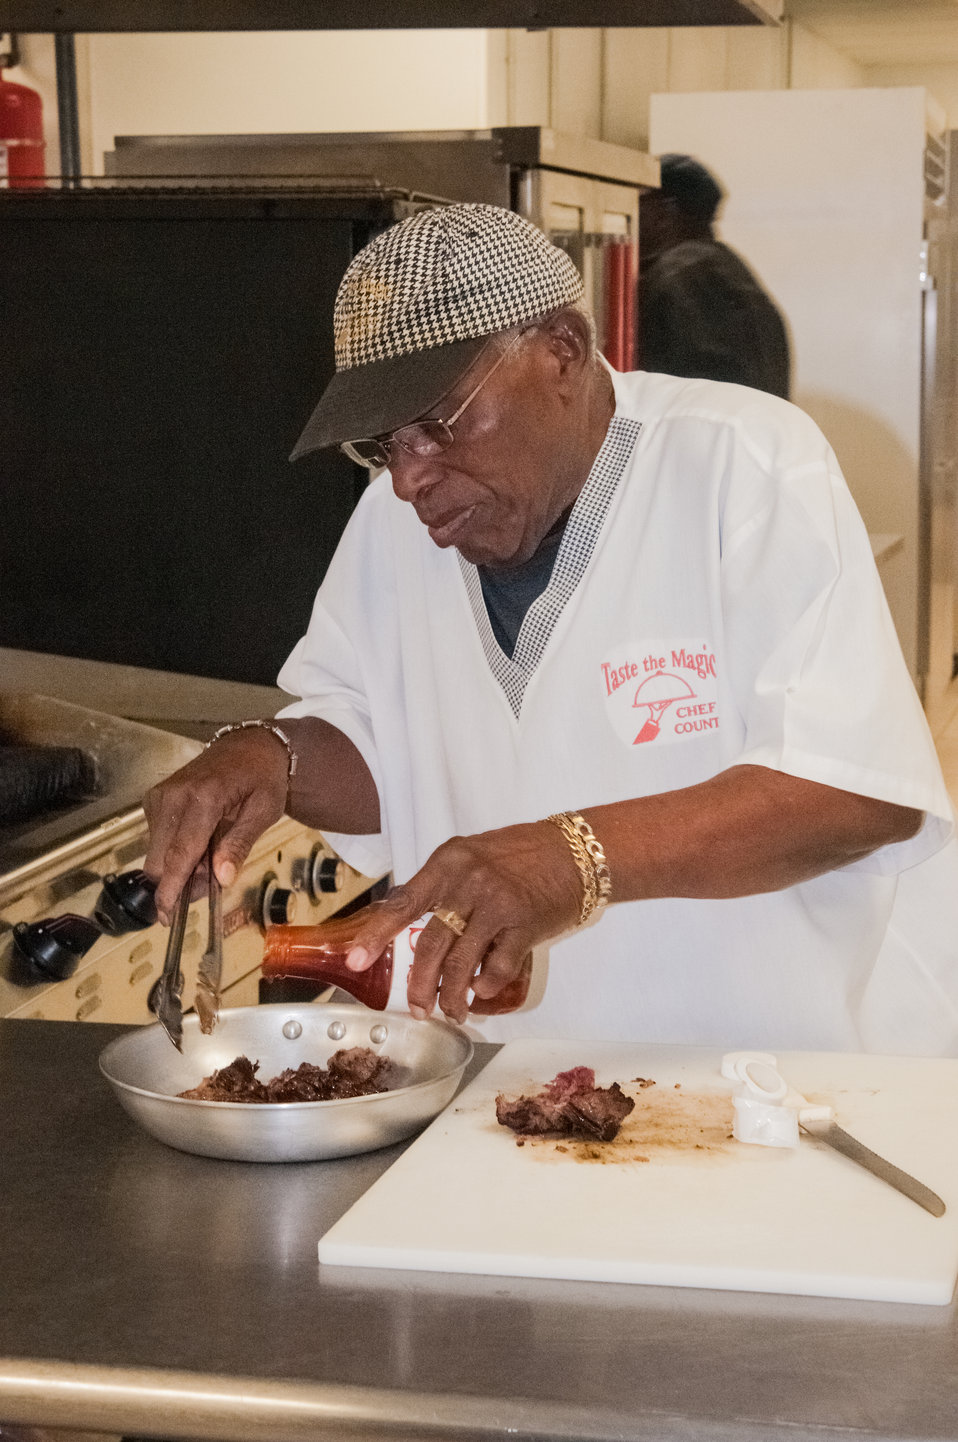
Chef Count Lofton prepares beef brisket in the incubator kitchen at the East Baker Historical Society Community Center in Newton, Baker County, GA on Mar. 7, 2013. The East Baker Historical Society Community Center secured a U.S. Department of Agriculture (USDA) Rural Development (RD) Community Facilities (CF) Loan for the kitchen that enabled residents to prepare catered meals and to prepare and package food products. The USDA Strike Force Initiative has designated Baker County, GA as a Strike Force county selected to receive assistance to relieve persistent poverty in historically high-poverty counties.